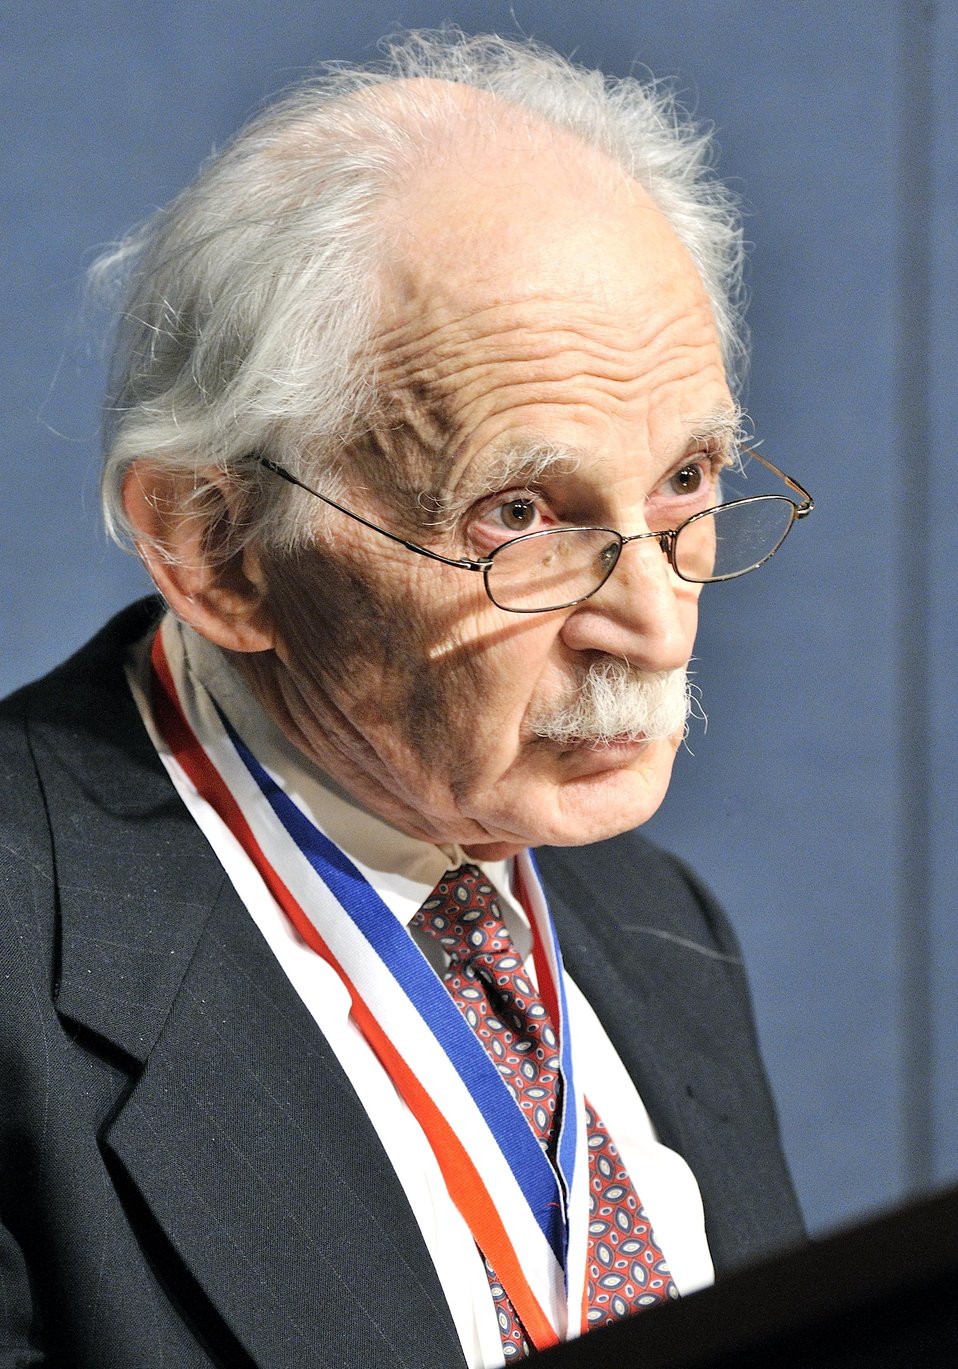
ALLEN J. BARD SPEAKS AT THE ENRICO FERMI AWARD ON FEBRUARY 3, 2014 AT THE U.S. DEPARTMENT OF ENERGY